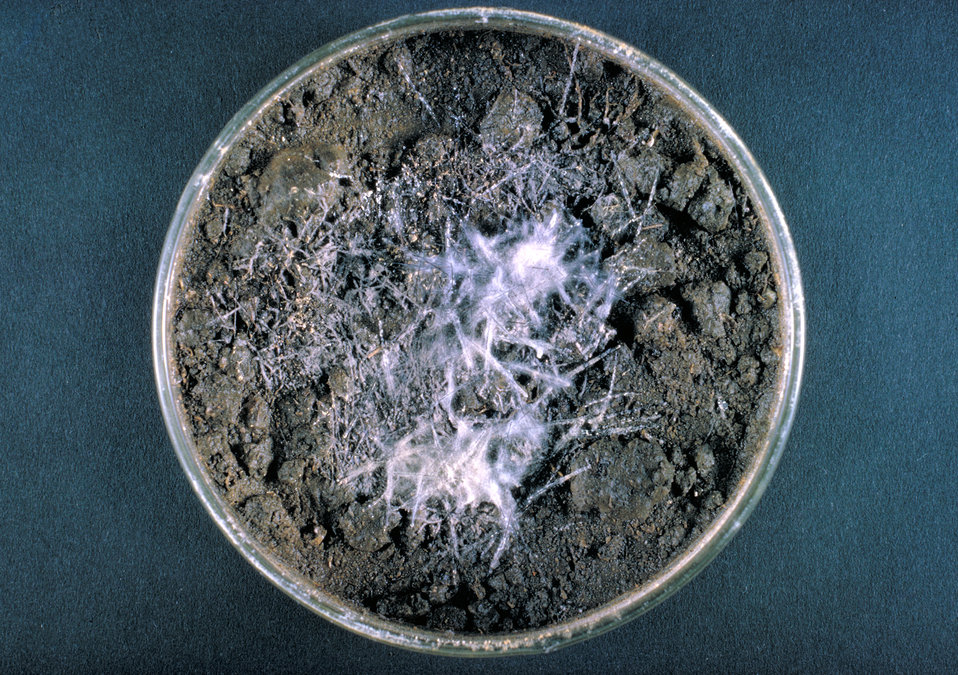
His hair-plate culture is growing the fungus Trichophyton ajelloi, formerly named Keratinomyces ajelloi.